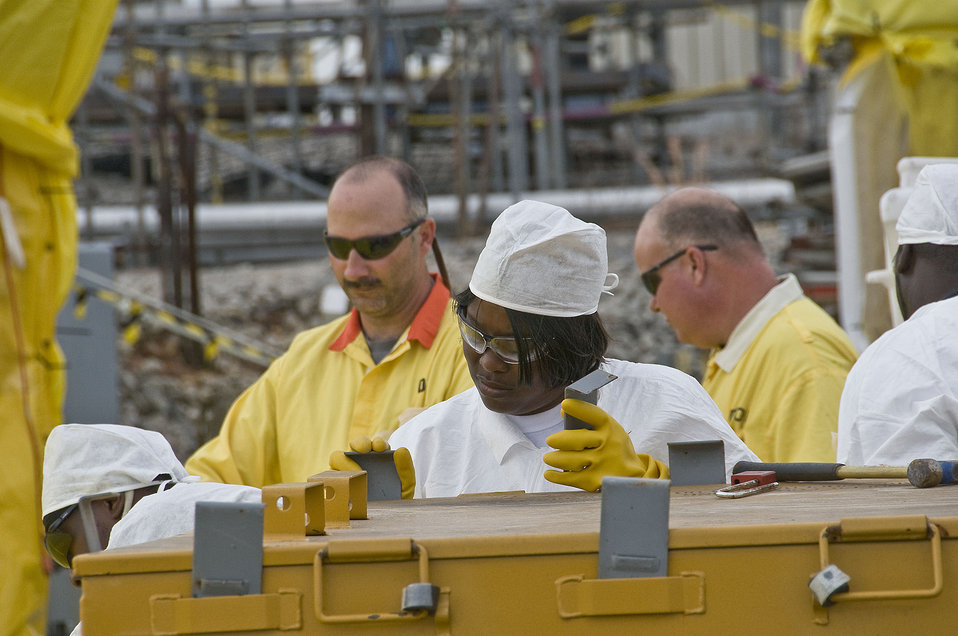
Recovery Act Workers Develop Skills for Careers in Nuclear Industry

Recovery Act workers perform work to upgrade an underground waste storage tank at the Savannah River Site.